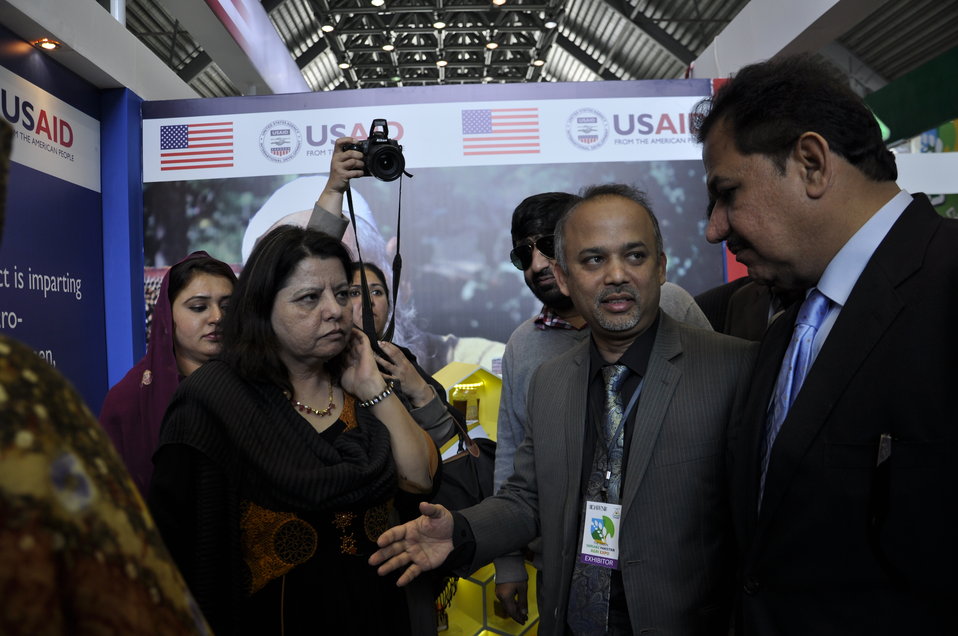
Provincial Minister for Agriculture visiting the stall of USAID's Entrepreneurs Project at Dawn Sarsabz Pakistan Agri Expo.